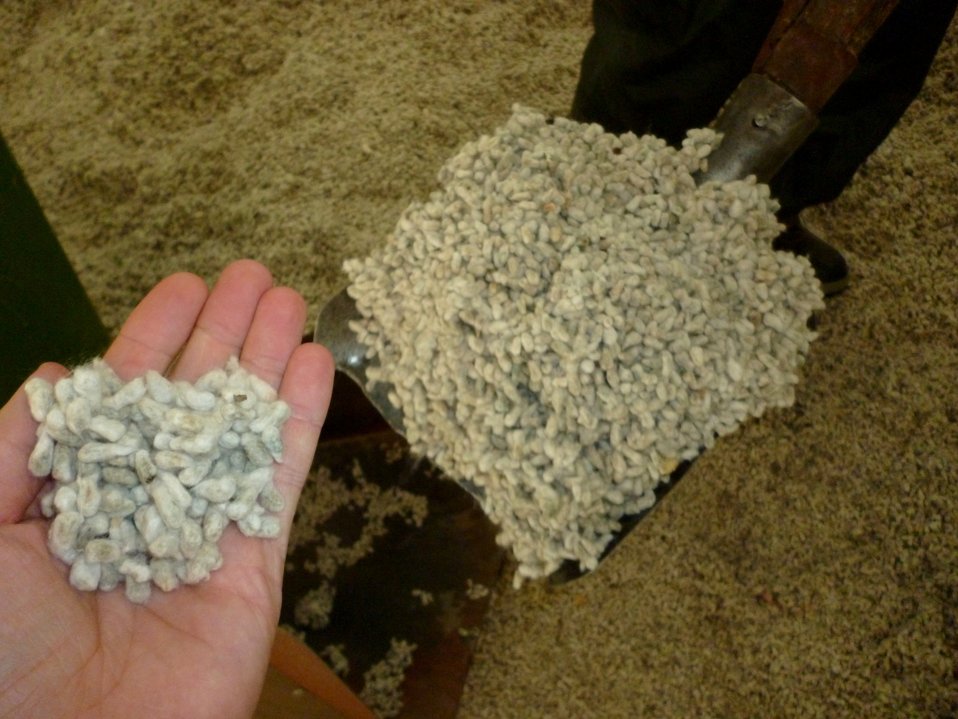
A useful byproduct of producing cotton is the cottonseed itself, which can be used as animal feed or pressed into cooking oil, as these seeds are about to be at a cottonseed oil factory in Mazar. The owner has expanded his business with a loan he receive